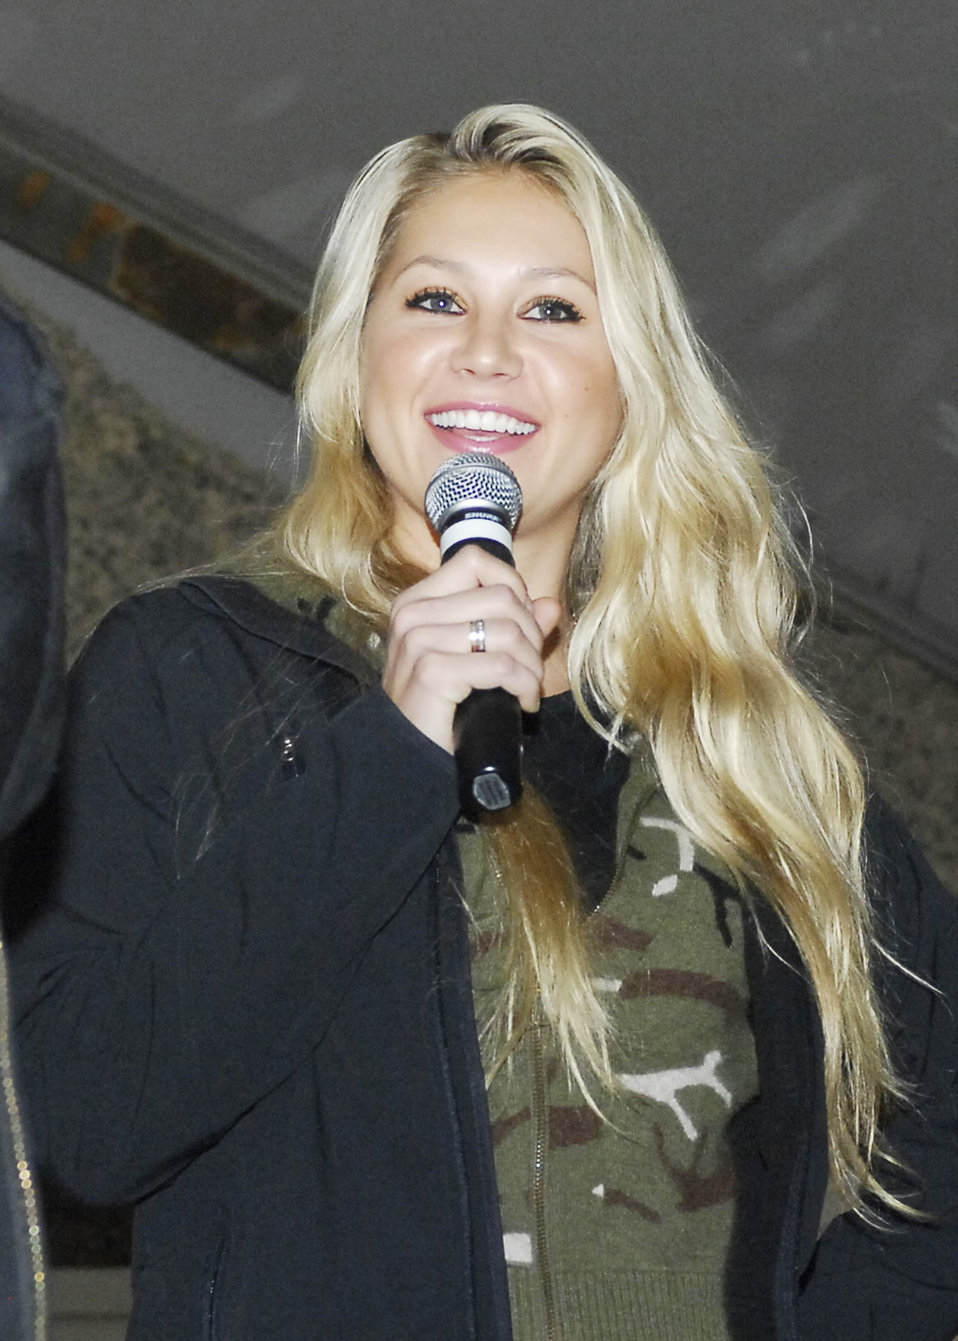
USO brings celebrities to Servicemen and women

Anna Kournikova entertains the Airmen, Soldiers, Sailors and Marines at Bagram Airfield, Afghanistan, during a United Service Organization tour Dec. 15, 2009. Mrs. Kournikova, Dave Attell, Billy Ray Cyrus, and Nick Bollettieri are featured in an USO tour boosting the morale of deployed servicemen and women. Mrs. Kournikova is a tennis pro originally from Russia and now calls Miami home.